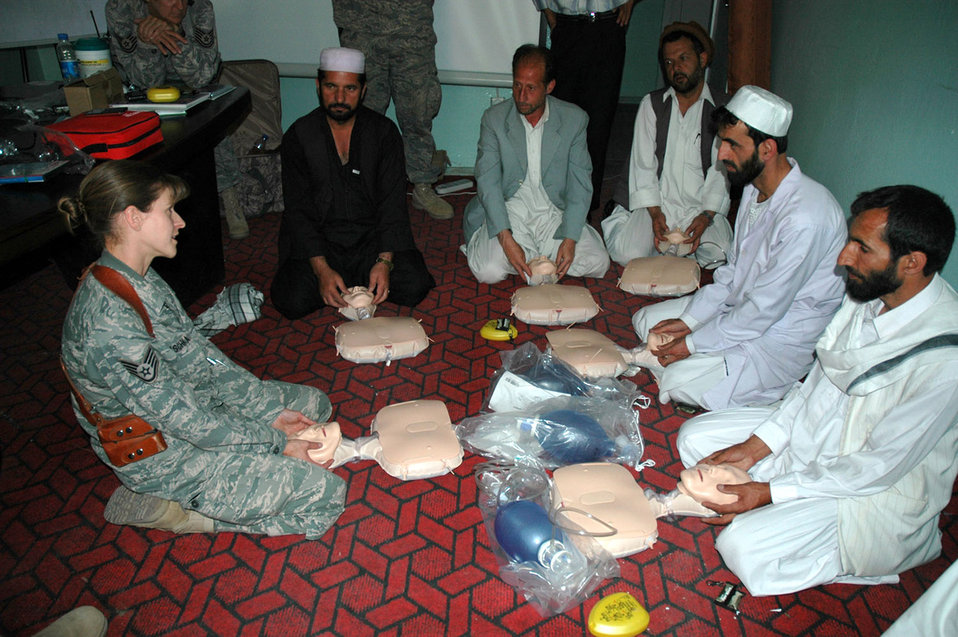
Servicemembers teach CPR to Afghan medical providers

Staff Sgt. Janine Duschka teaches infant CPR to Afghan medical providers during a CPR class June 18 at the Rokha Clinic in the Panjshir Province in Afghanistan. This was the first session of a 15-class CPR program that the Panjshir PRT is providing this year. Sergeant Duschka is a Panjshir Provincial Reconstruction Team medical technician.